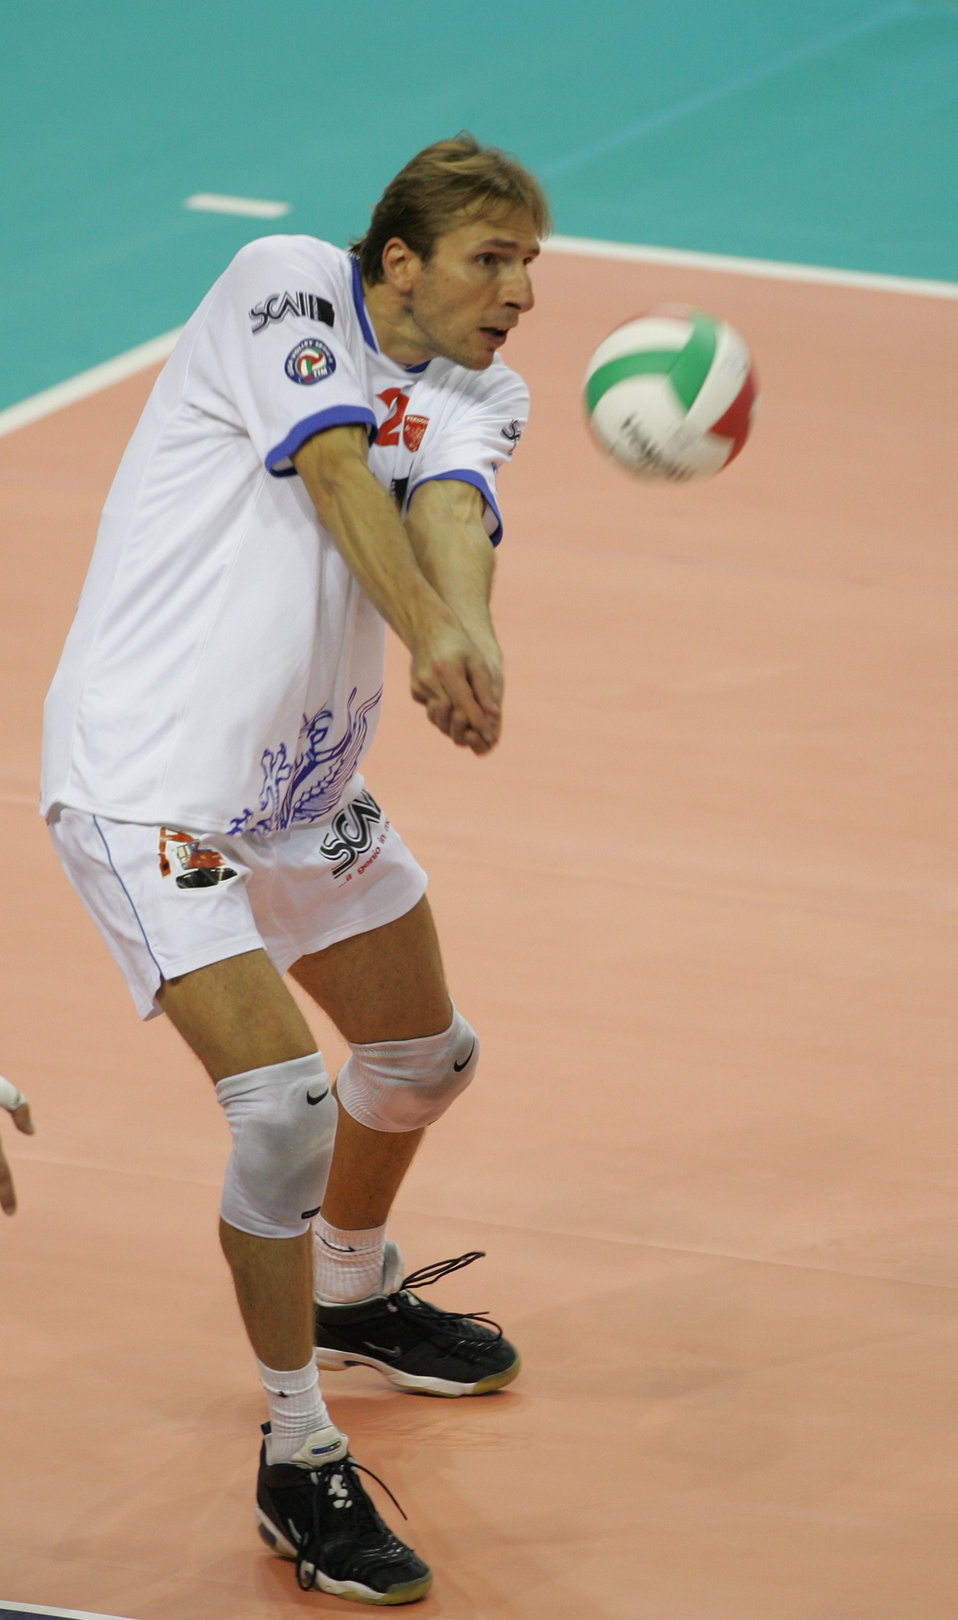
Italiano: Damiano Pippi